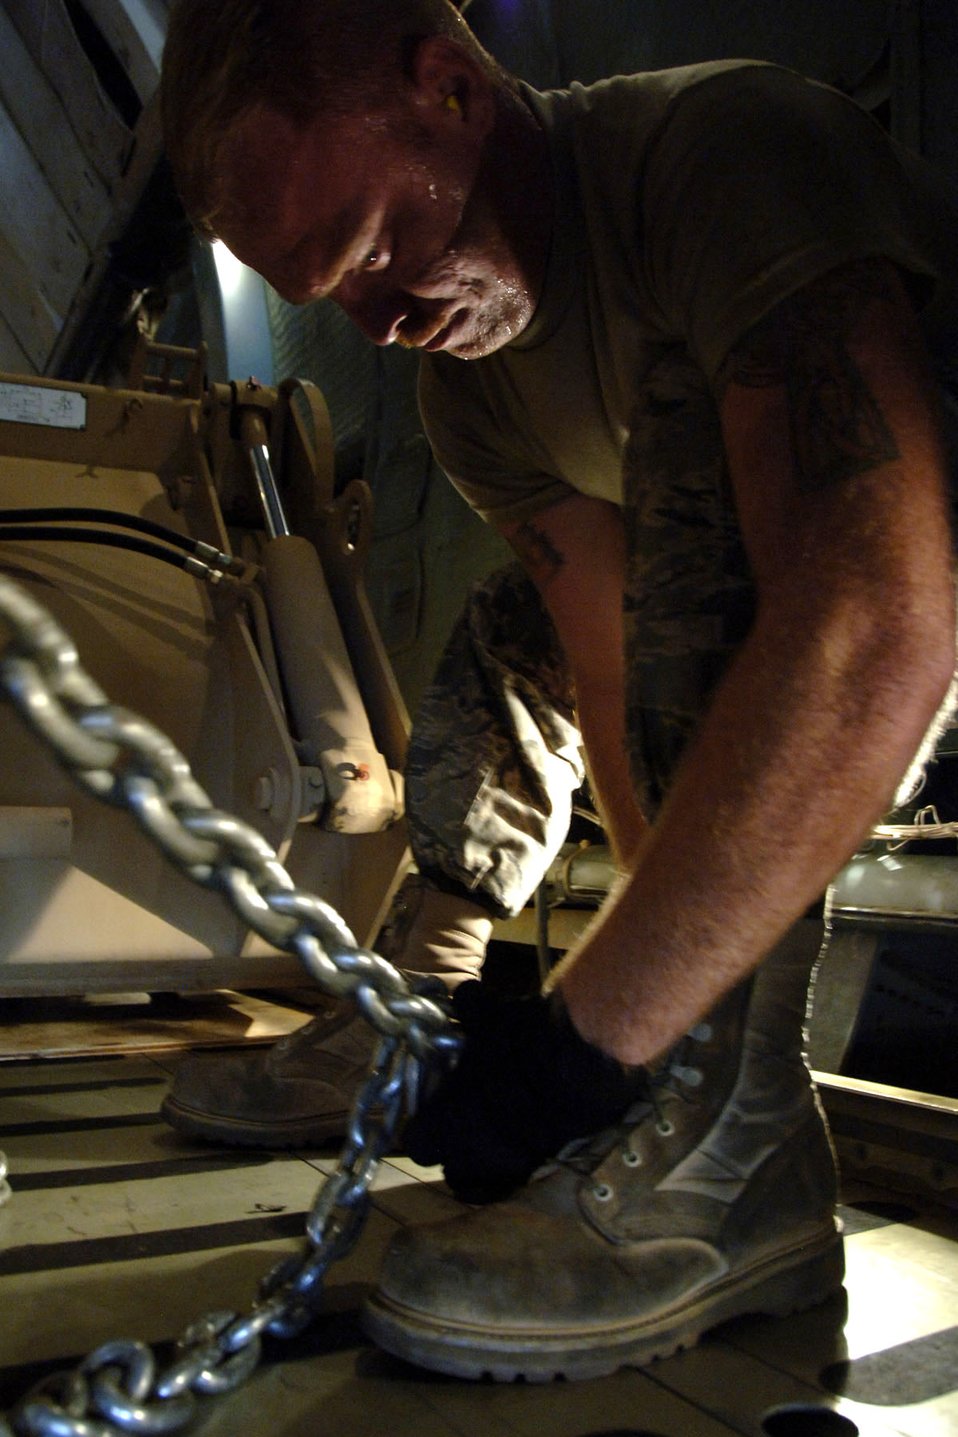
Charleston Airmen begin transporting new Army vehicles

Senior Airman Jared Parsons tightens a clamp to secure an Army High Mobility Engineer Excavator to the bed of a C-5 Galaxy before takeoff Sept. 29 at Charleston Air Force Base, S.C. The HMEEs will be transported to forward deployed locations to assist Soldiers and contractors in hostile environments. Airman Parsons is an air transportation journeyman with the 437th Aerial Port Squadron.